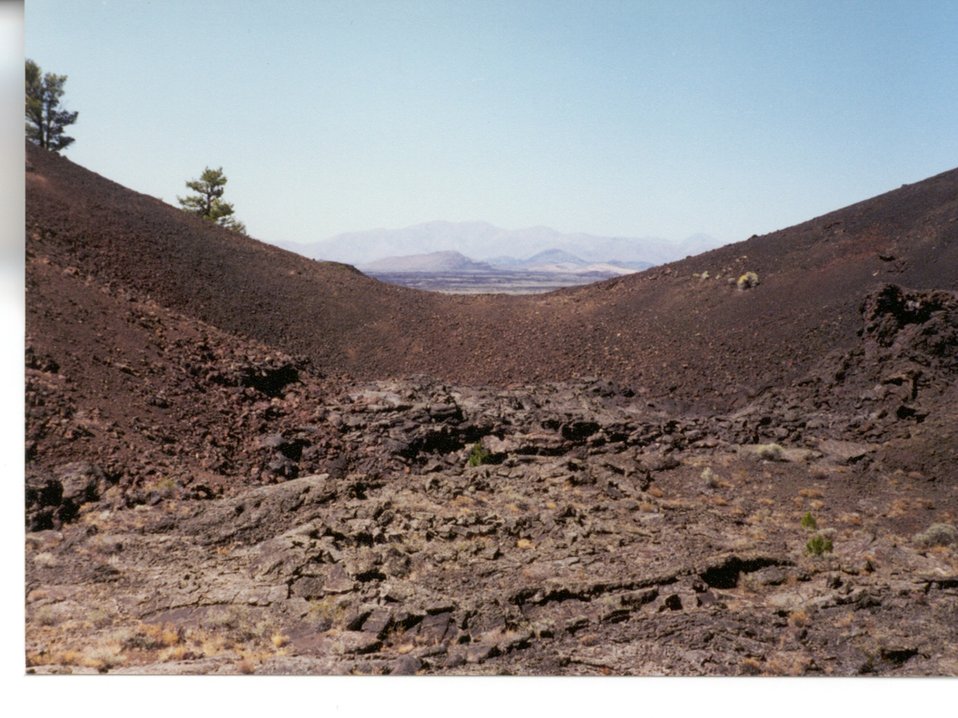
Up the Rift to Craters of the Moon from inside Black Tail Craters of the Moon Shoshone Field Office USRD Upper Snake River District